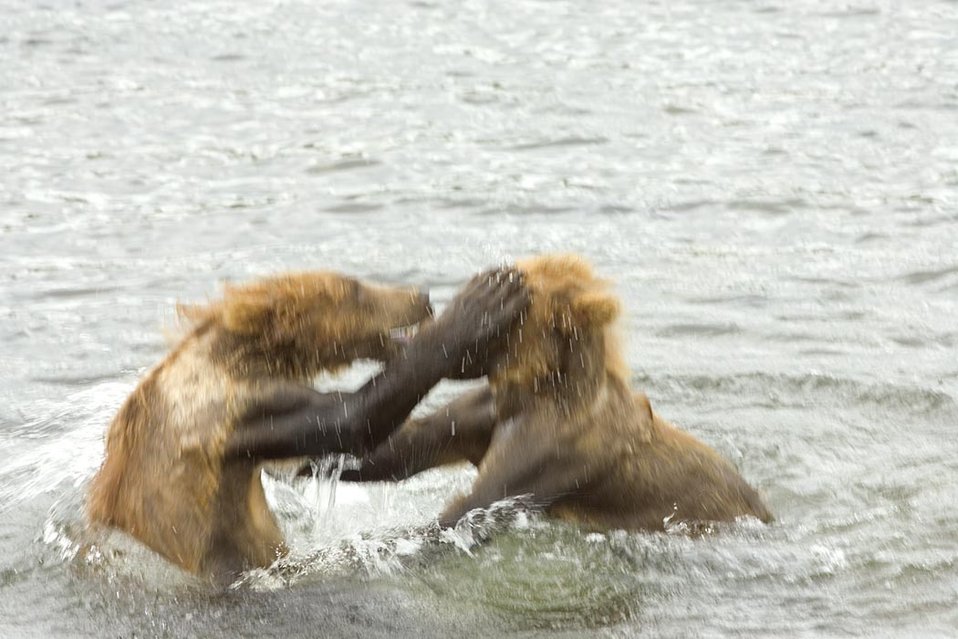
Brown bear cubs playing in water

This image taken at the Frazer Lake weir. Frazer Lake weir consists of a series of